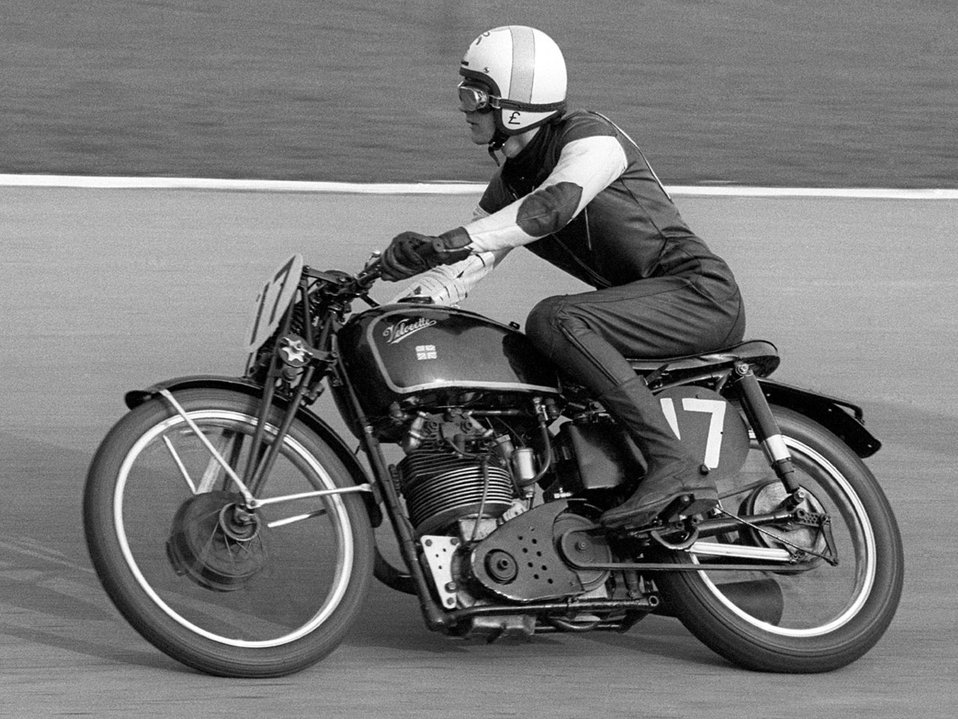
Vintage velocette race bike

Black and white shot of vintage nineteen forties 350cc velocette mark viii racer at crystal palace race circuit in the sixties.